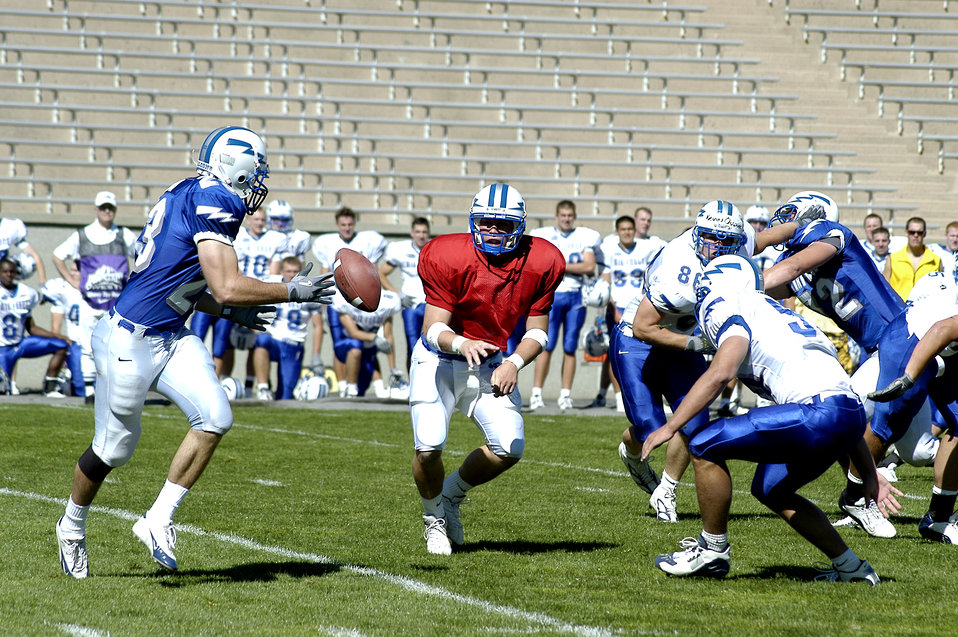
Gridiron gear up

U.S. AIR FORCE ACADEMY, Colo. -- Falcon freshman quarterback Shaun Carney pitches the ball to halfback Jason Boman during the Air Force Academy's final Blue-Silver scrimmage of the season Aug. 28. Carney will be the first freshman to start the season at quarterback in academy history Sept. 4 at home against No. 13. California.